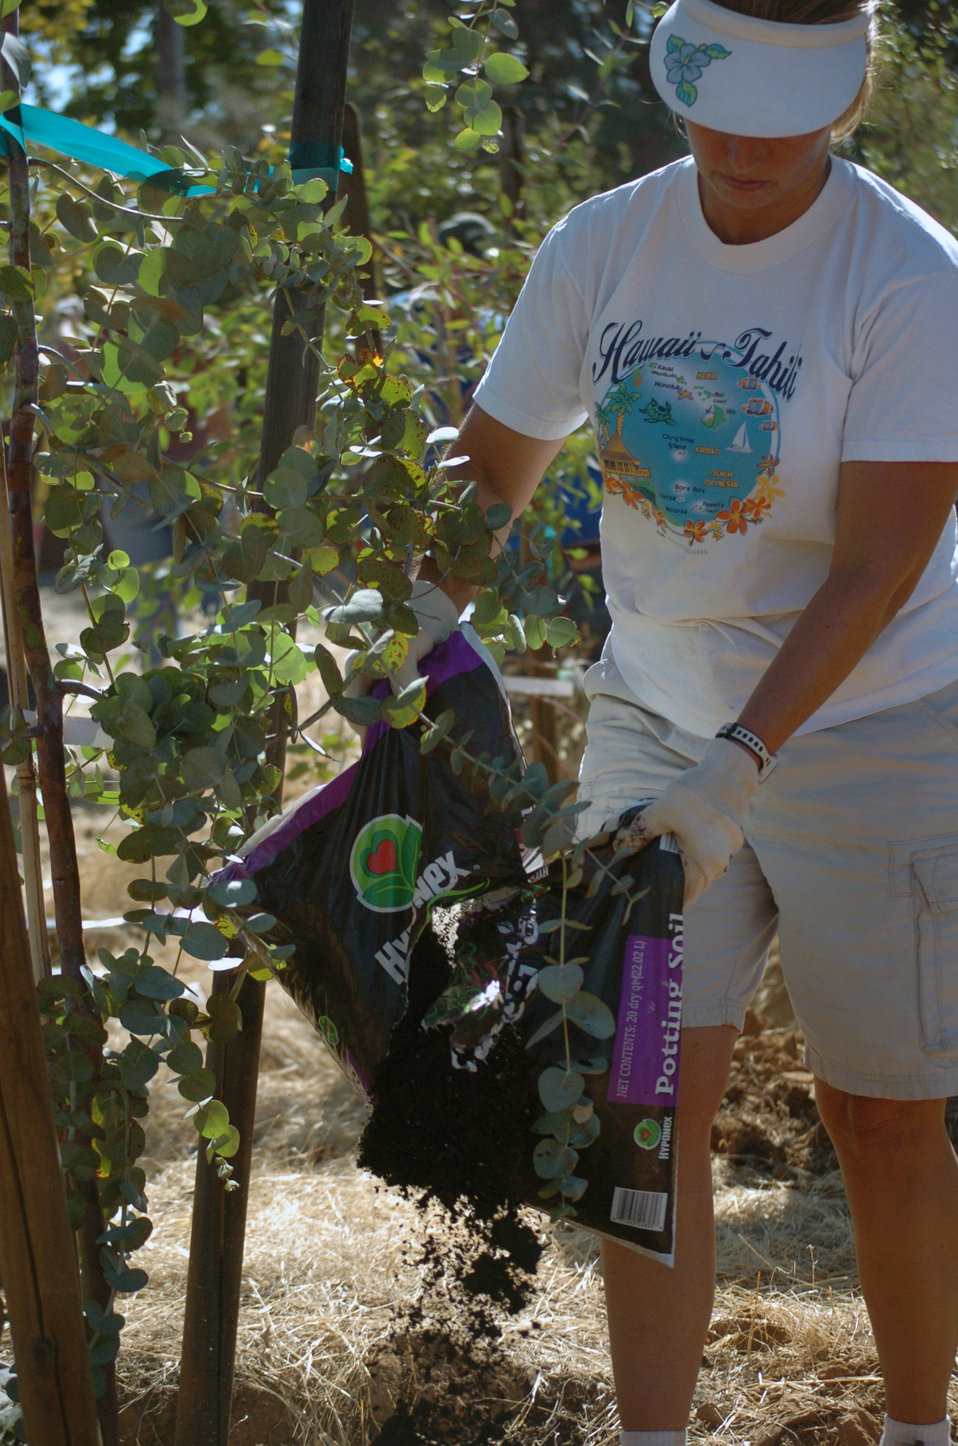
NEW HOGAN LAKE, Calif. (Sept. 25, 2010) -- A volunteer spreads soil onto a newly planted tree here Sept. 25 during National Public Lands Day. Nearly 200 volunteers were out at the lake, planting trees, picking up trash and improving trails. Sixteen trees were planted at two locations during the event, said Alicia Unsinn, New Hogan Lake park ranger. Volunteers were given free entry for the event and a coupon for a free day-use admission pass valid anytime in the next year at any park managed by the U.S. Army Corps of Engineers, National Park Service, U.S. Forest Service, U.S. Fish and Wildlife Service or Bureau of Land Management.